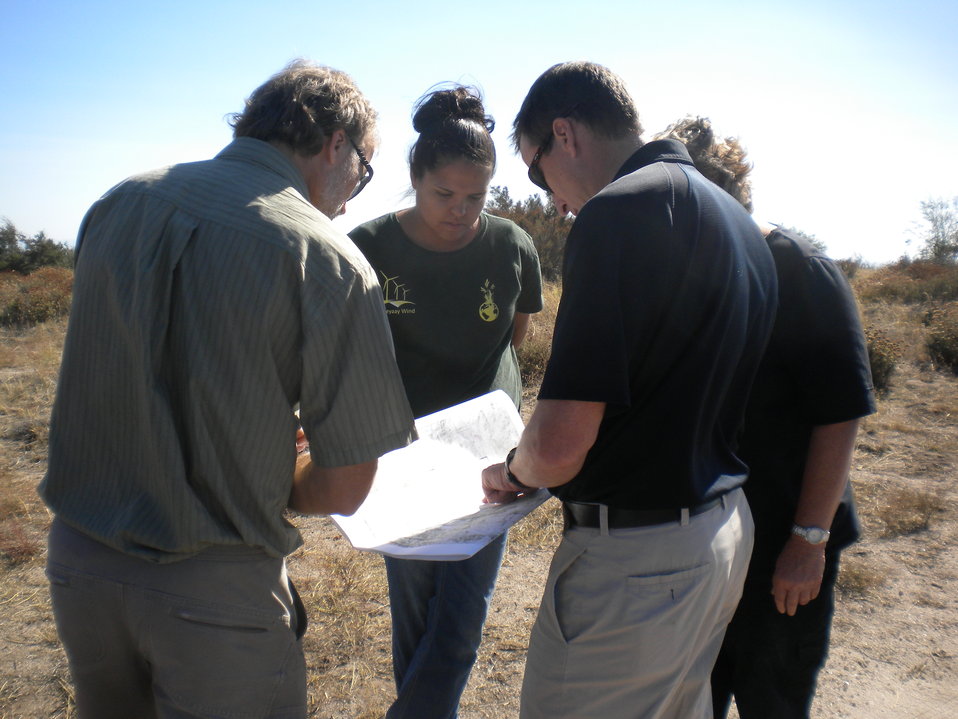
Office of Indian Energy START Team Site Visit in San Diego, California

December 19, 2012 - During an Office of Indian Energy Strategic Technical Assistance Response Team (START) site visit on the Campo Indian Reservation in San Diego County, NREL's Bob Springer (right) and Robi Robichaud review a site map with Laura Quaha of the Campo Kumeyaay Nation (center) and Melissa Estes with the Campo Environmental Protection Agency.